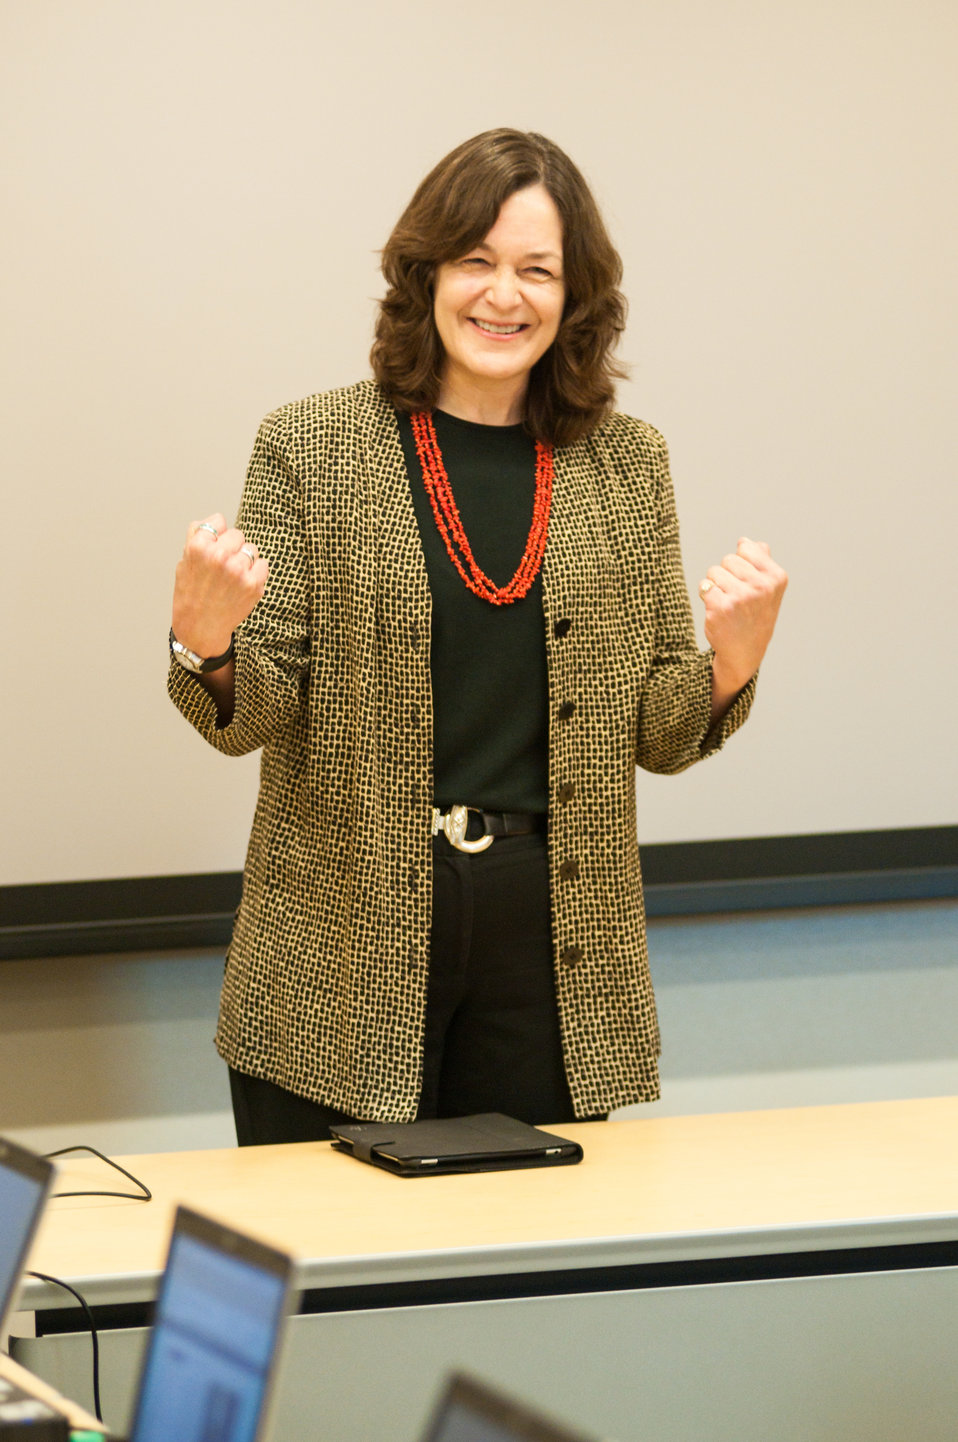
U.S. Department of Agriculture (USDA) Director of Tribal Relations and Senior Advisor to the Secretary Leslie Wheelock discusses government to government relations with the Nation’s American Indian and Alaska Native Sovereign Nations and USDA’s dedication to working on behalf of the American Indian Community at the USDA 2013 Land-Grant Development Tribal Fellows Program held in Washington, D.C. on Monday, Jun.03, 2013.